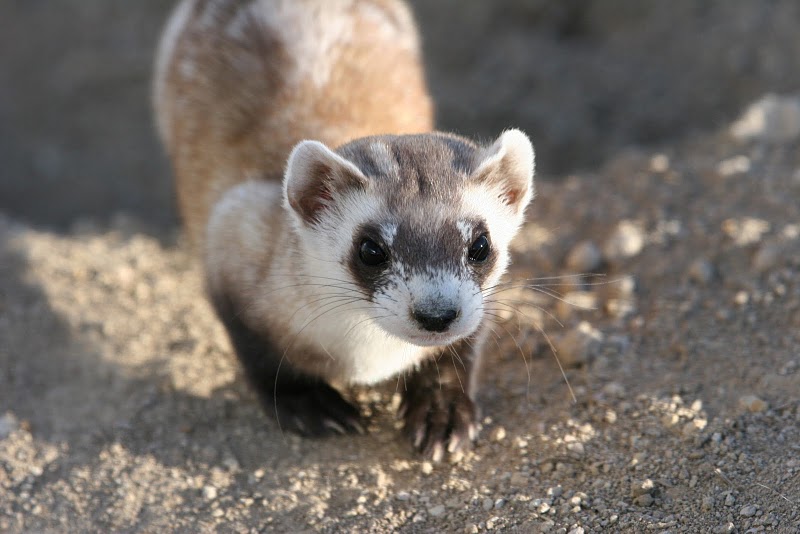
Black-footed Ferret